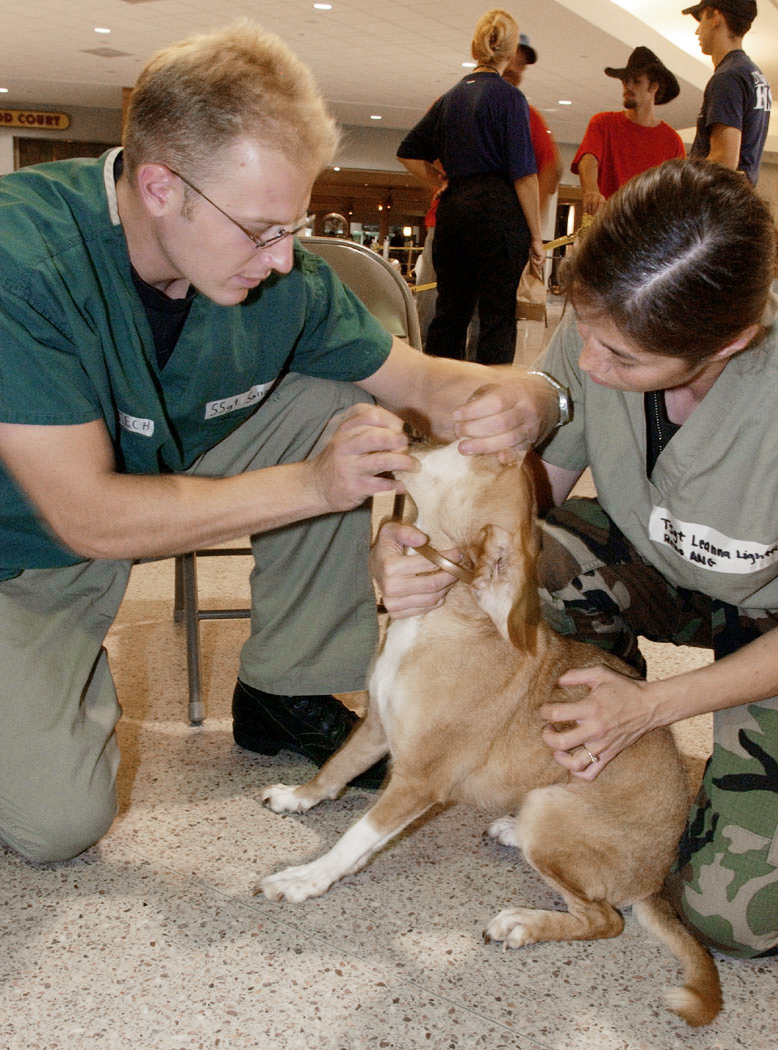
Animals in the aftermath

LOUIS ARMSTRONG NEW ORLEANS INTERNATIONAL AIRPORT, La. -- Staff Sgt. Kevin Sanada (left) and Tech. Sgt. Leanna Lightfoot examine a dog affected by Hurricane Katrina. Evacuees and their pets are being brought here for an examination before being taken to their final destination. The Airmen are medics with the Nevada Air National Guard's 152nd Medical Group.